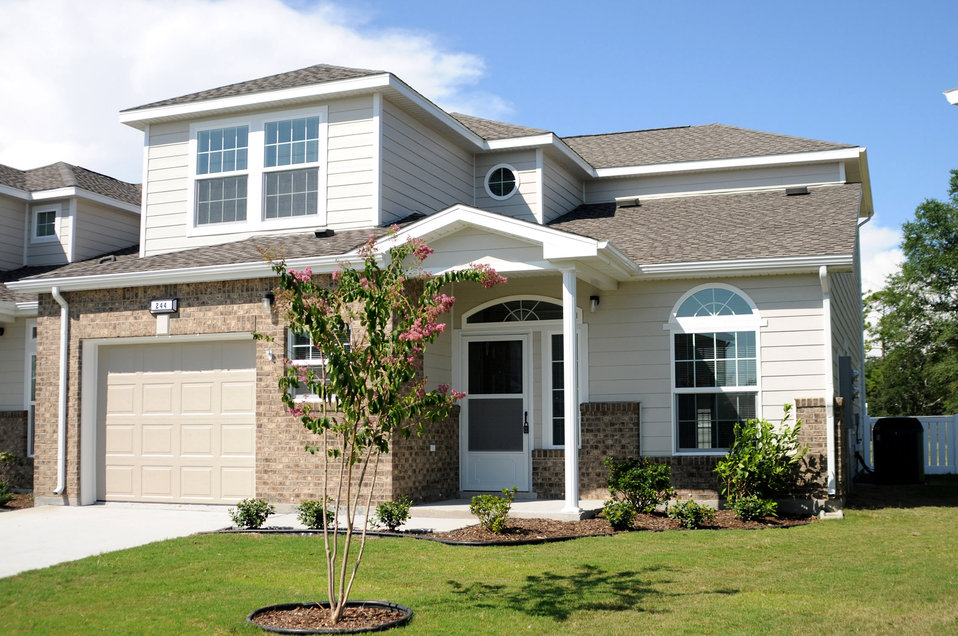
Keesler's first energy, environmental-friendly home certified

Base officials received their first certified Leadership in Energy and Environmental Design home Aug. 28 at Keesler Air Force Base, Miss.